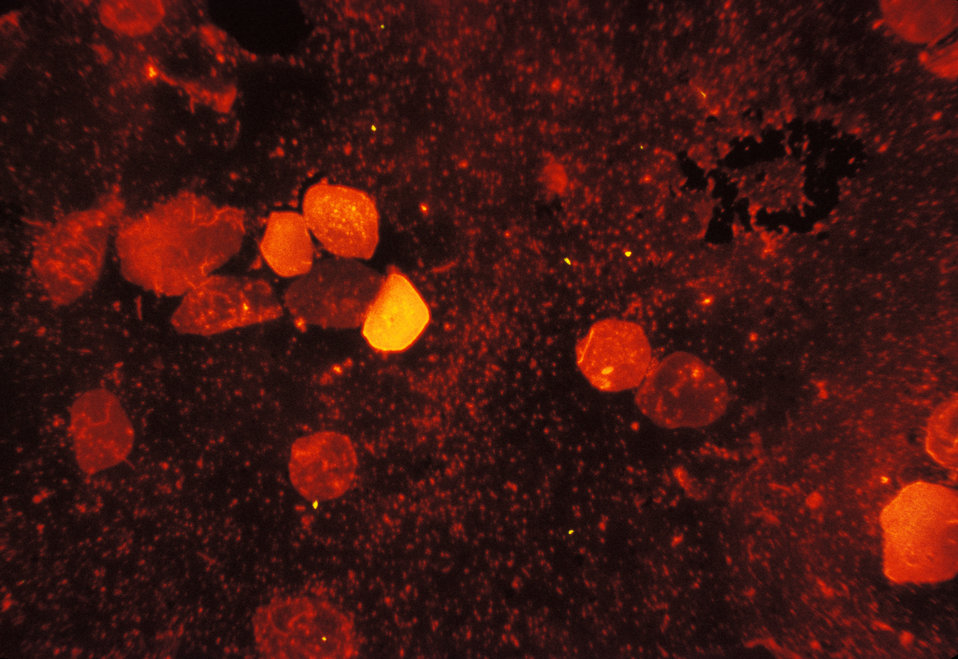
Here we see Mycobacterium tuberculosis in a sputum smear is stained using fluorescent acid-fast stain.